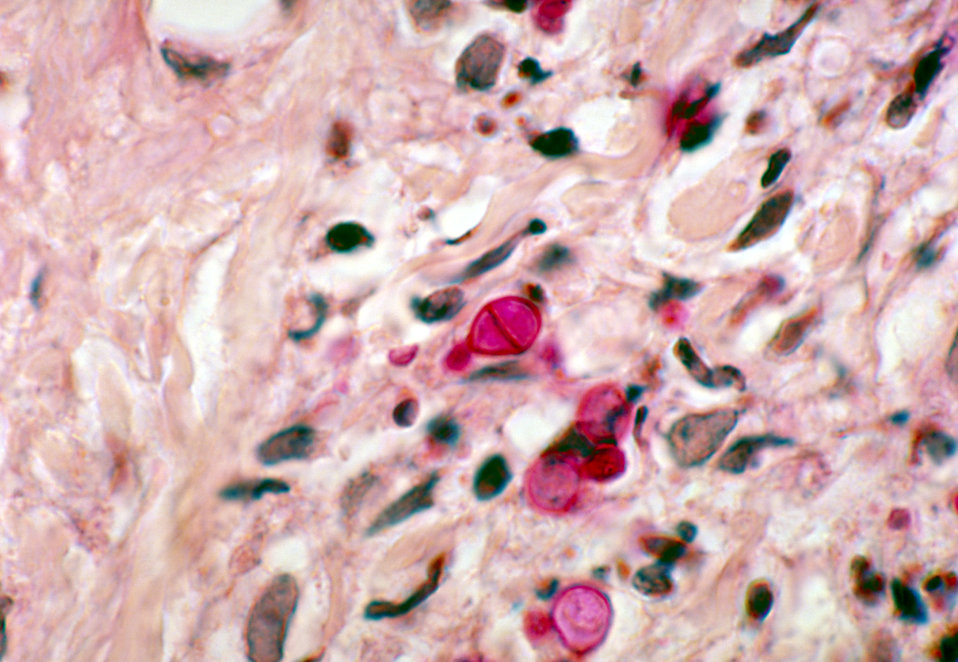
This micrograph reveals the histopathologic changes in phaeohyphomycosis due to Wangiella dermatitidis using PAS stain.